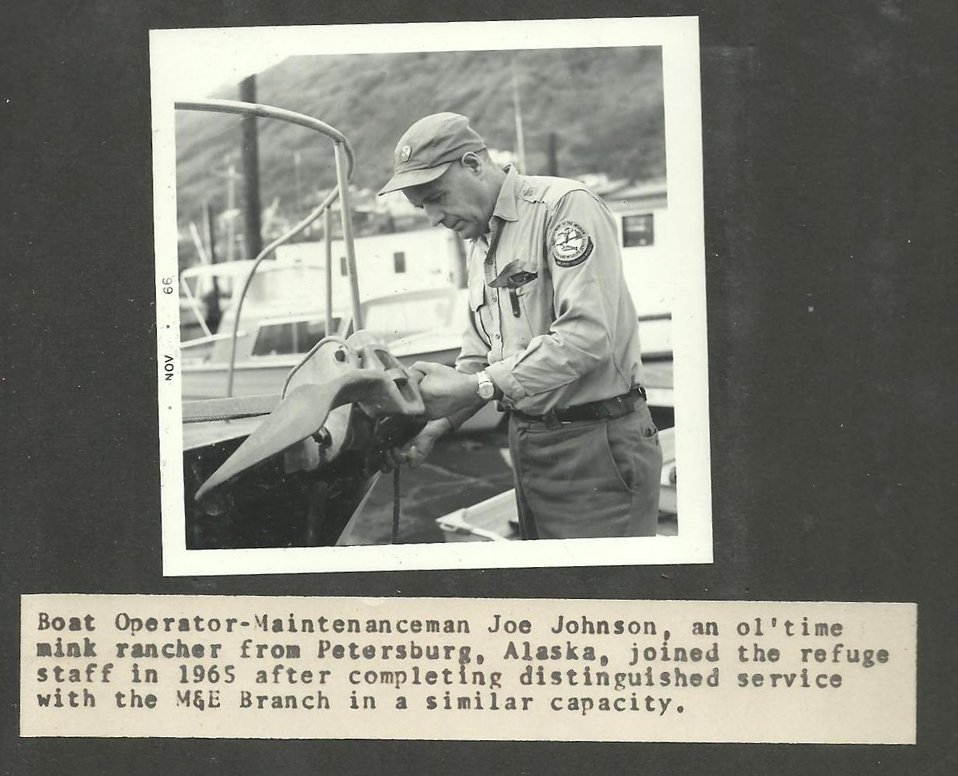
(1966) Maintenance and Captain Johnson

Credit: USFWS

Source and Contact: Kodiak National Wildlife Refuge